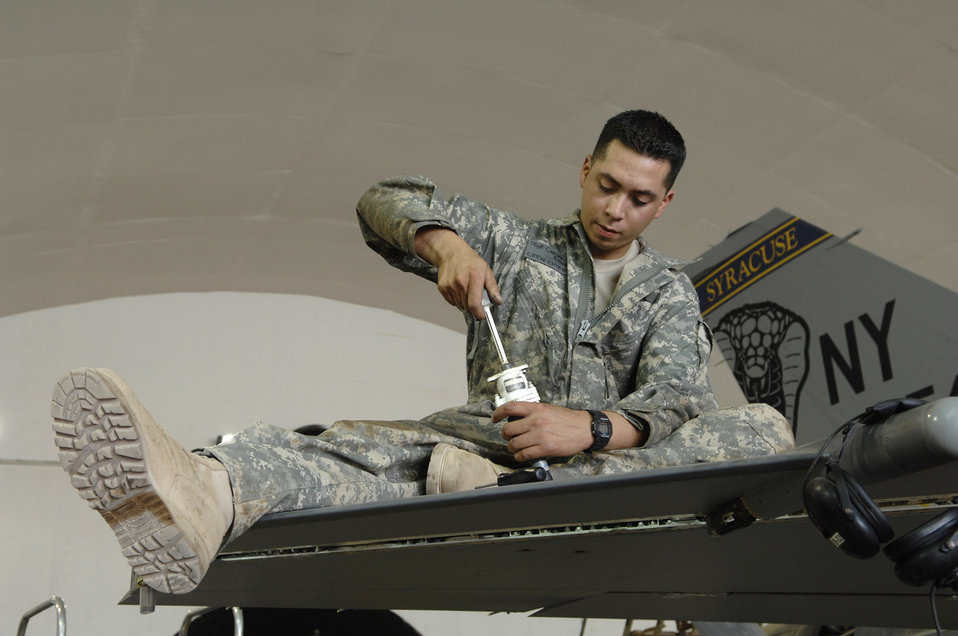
Just a phase

Staff Sgt. Caesar Rivera rotates an actuator for the leading edge flap test of an F-16 Fighting Falcon during a phase inspection June 18 at Joint Base Balad, Iraq. The leading edge flap provides additional lift and drag during take off and landing. Sergeant Rivera is a 332nd Expeditionary Aircraft Maintenance Squadron crew chief deployed from Nellis Air Force Base, Nev.